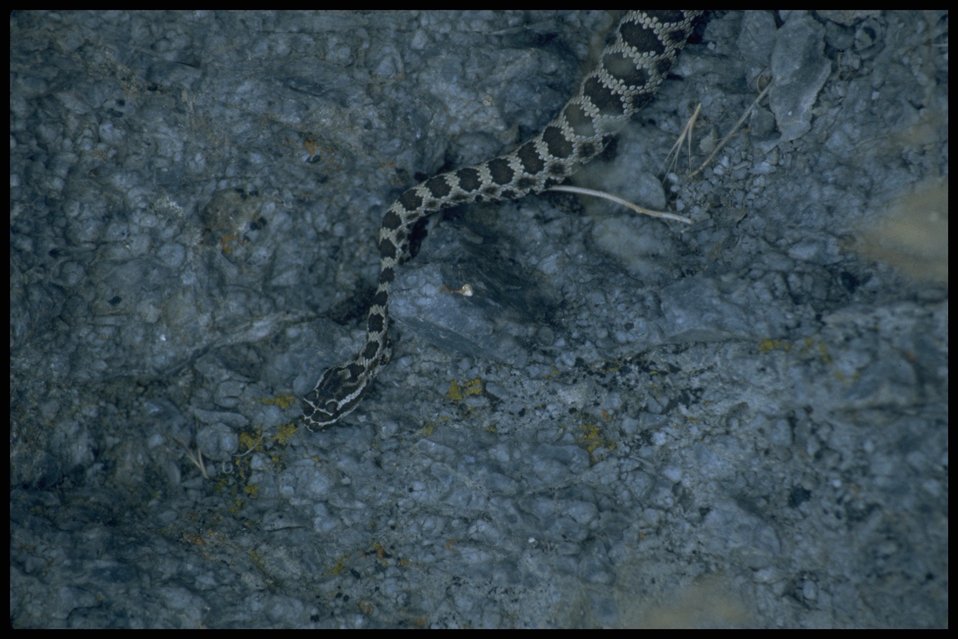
Lakeview District. Rattle Snake.